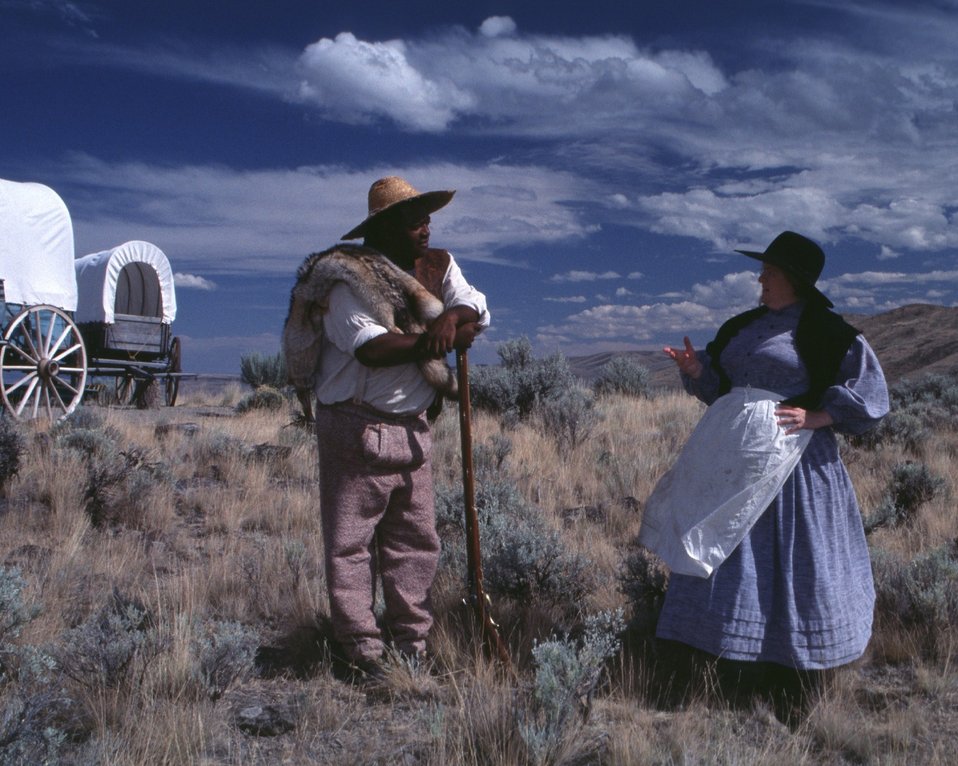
Nancy Harms and Dylan Prichertt portray pioneer woman and a black pioneer trading a fur at an Oregon Trail wagon encampment.